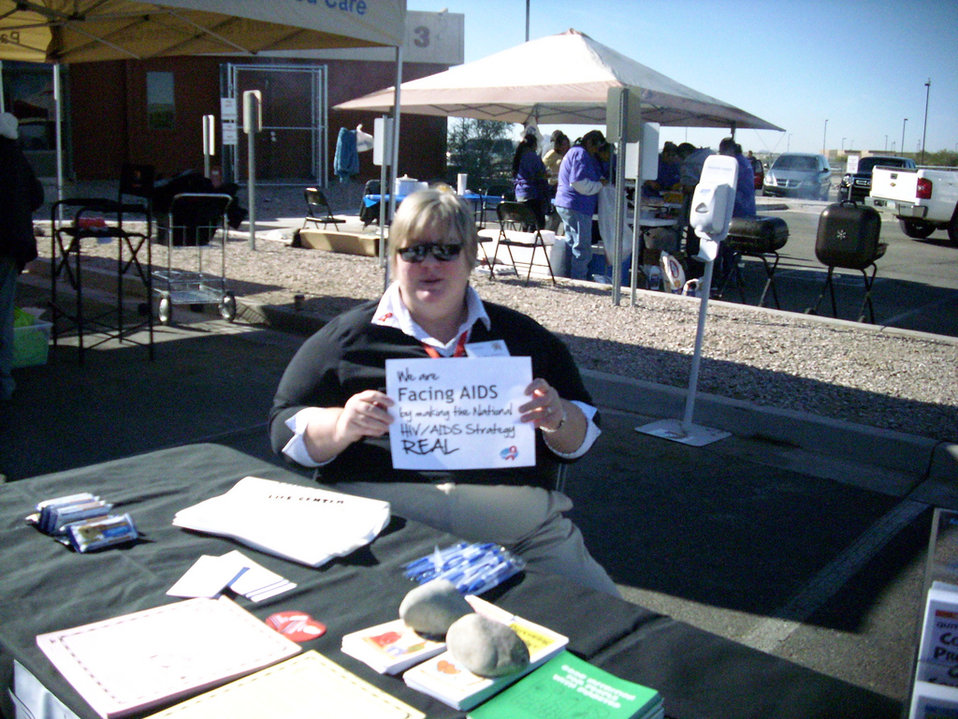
We are Facing AIDS through NHAS-31